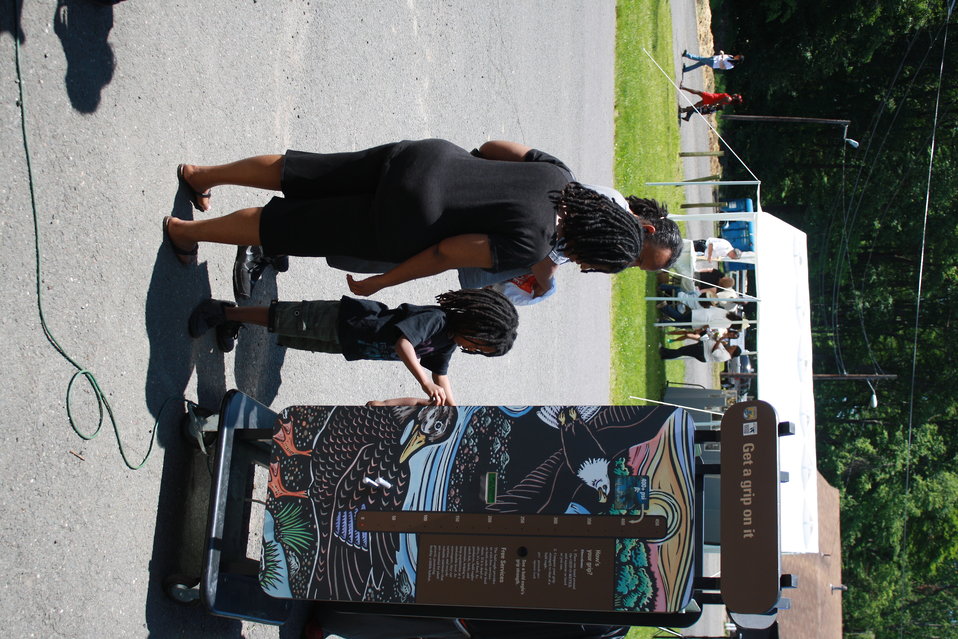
Viewing the WOW Express

WOW Express at Keney Park in Hartford, Conn.